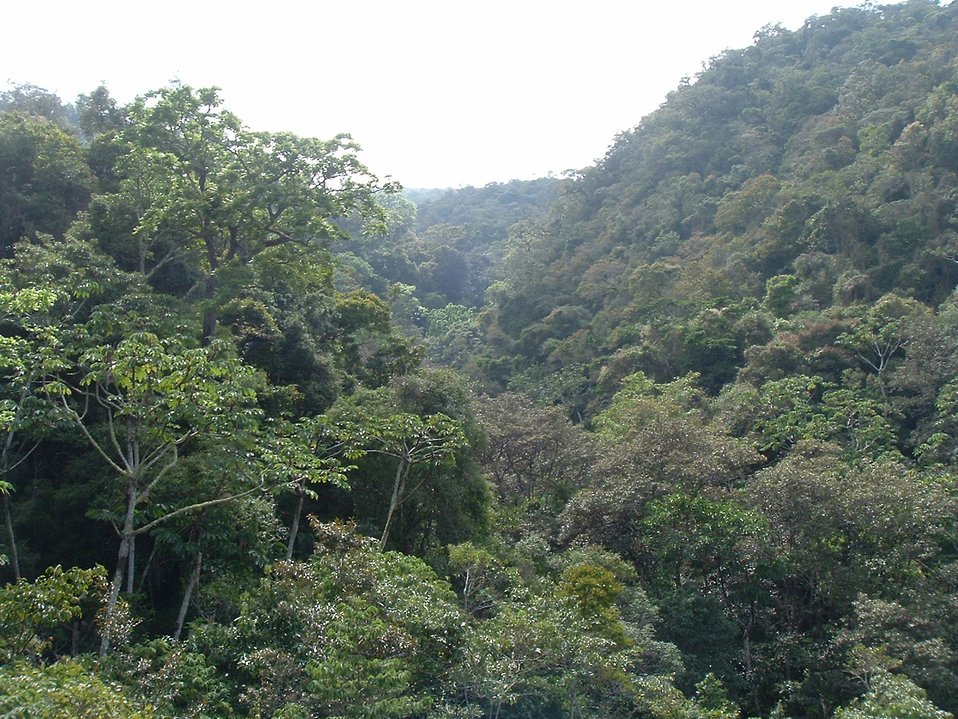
Species-rich cloud forest habitat protected through a grant project in upstream Los Negros, Bolivia. Supported by the Neotropical Migratory Bird Conservation Act.